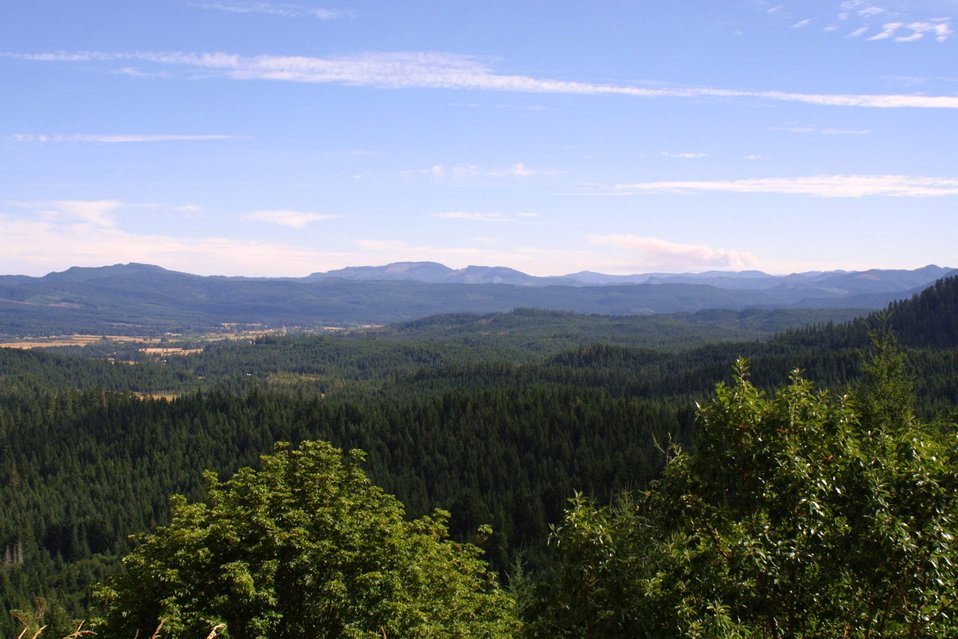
Camas East Timber Sale in Late Successional Reserve.